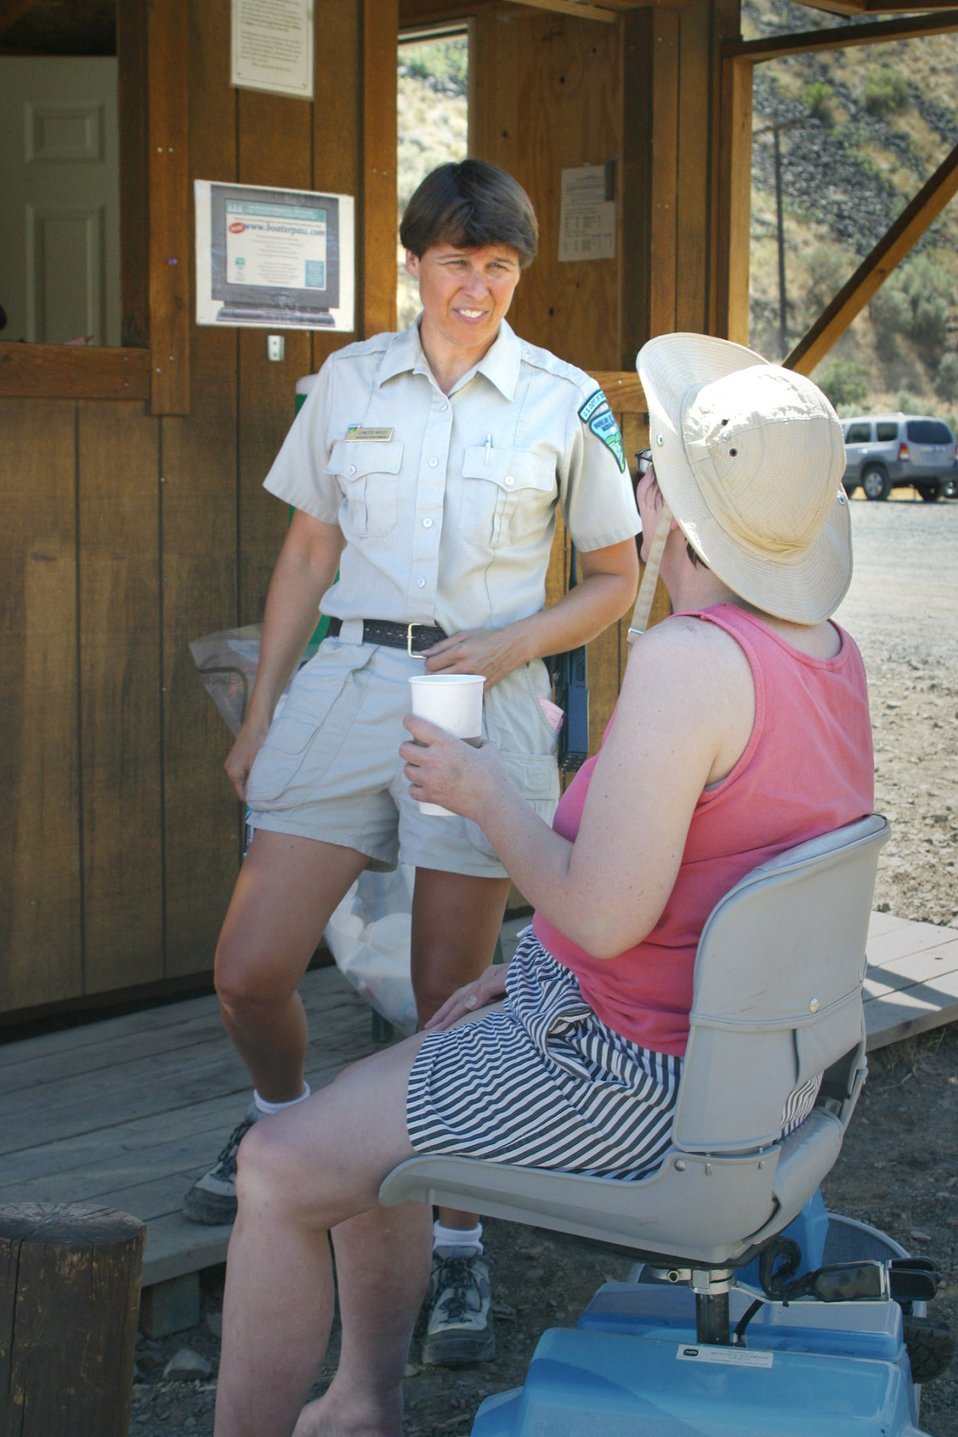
Over 200,000 people a year float the Lower Deshutes River.